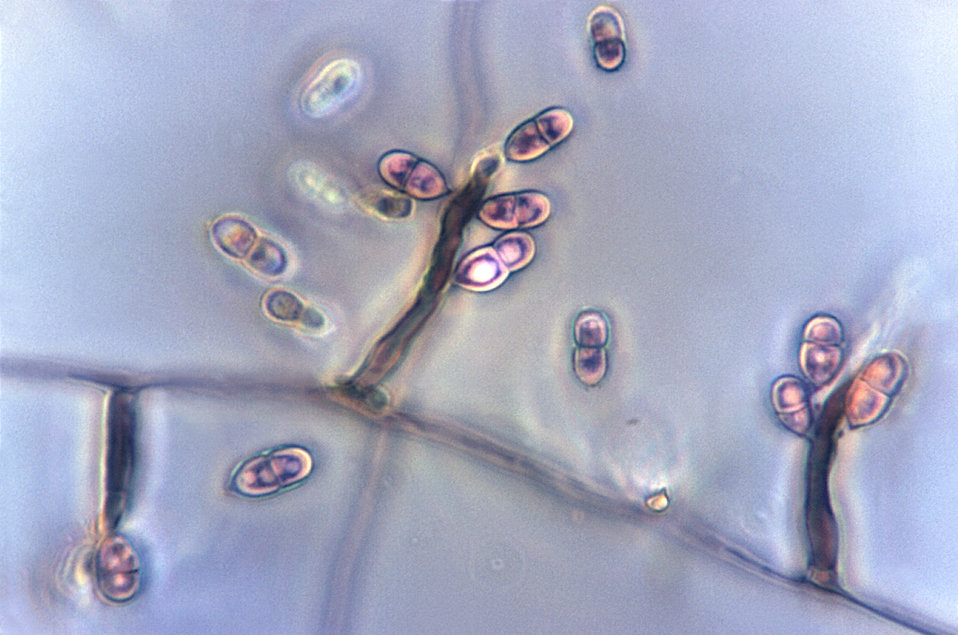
Under a relatively-high magnification of 1125X, this photomicrograph revealed the presence of a conidiophore from which numbers of conidia had developed.